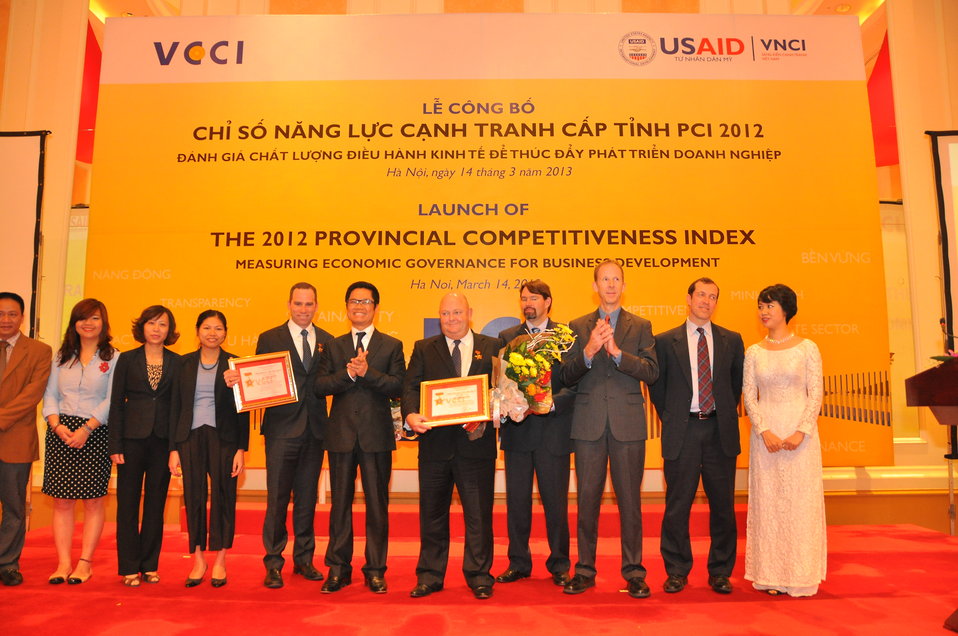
Provincial Competitiveness Index Launch, March 14, 2013

Hanoi, March 13, 2013